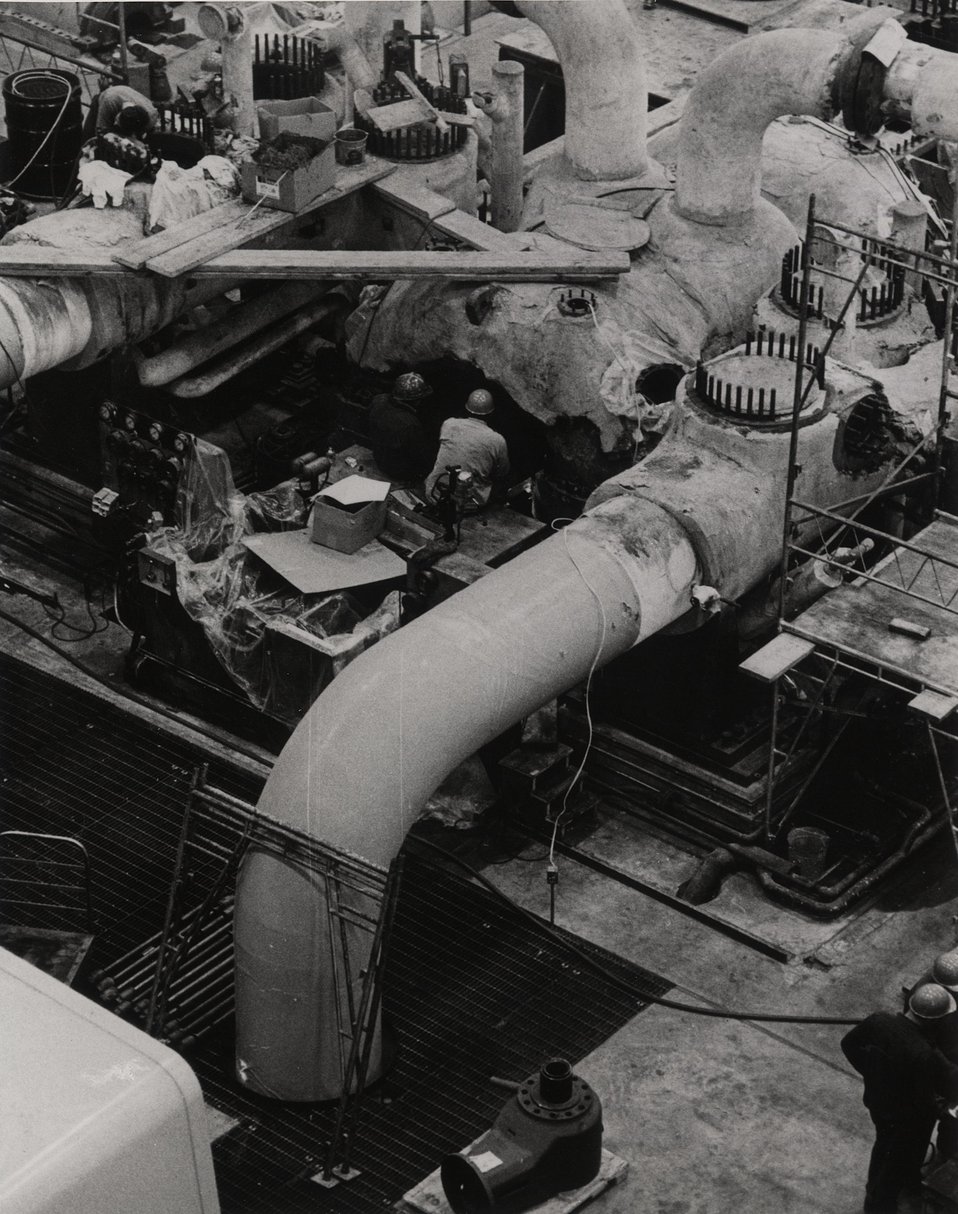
Haddam Neck-routine maintenance work underway on a high pressure turbine during the reactor shutdown.